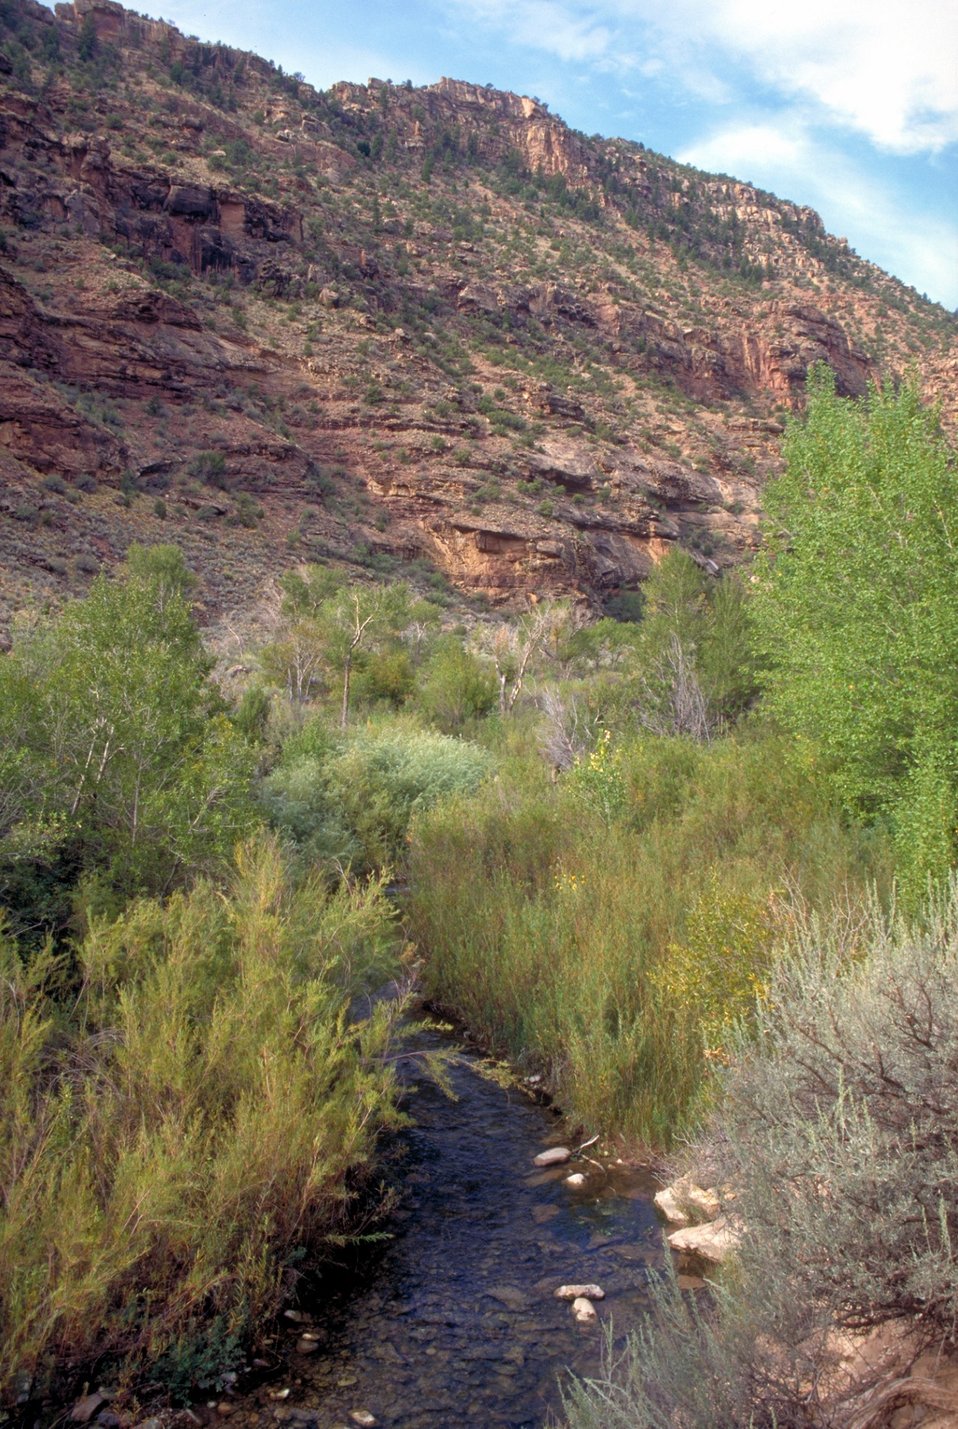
Desolation/Gray Canyons near Price, Utah.